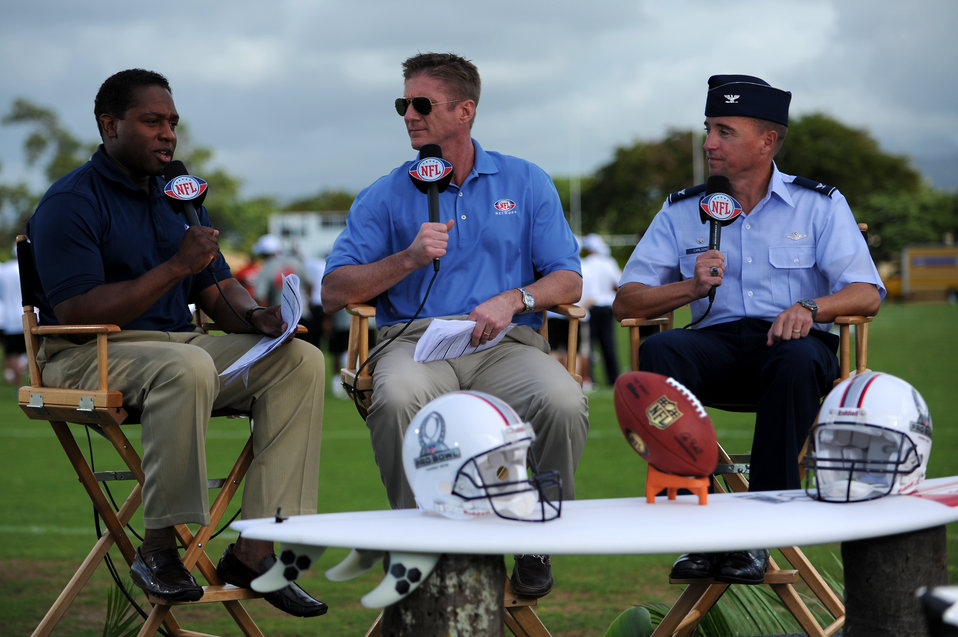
The 'view

Fran Charles and Tom Waddle, both NFL Network analysts, interview Col. Dann Carlson, the 647th Air Base Group commander and Joint Base Pearl Harbor-Hickam deputy commander, during the Pro Bowl practice sessions at Earhart Field, Hawaii, Jan. 26, 2012.